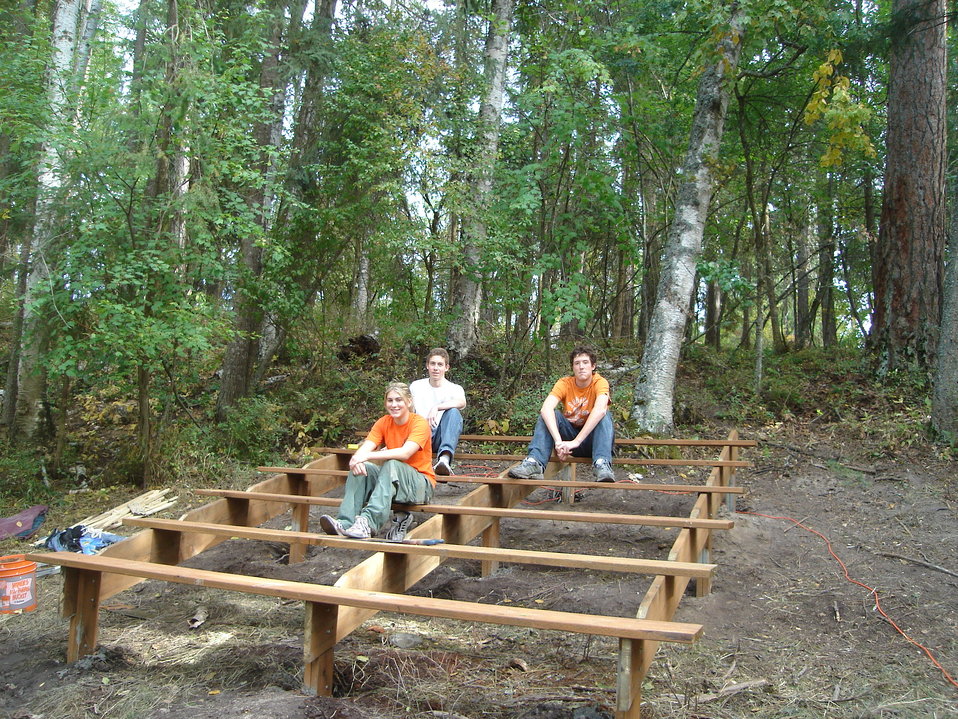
Creston National Fish Hatchery Classroom by the Creek

The nature trail was constructed in the fall of 2007 with the help of two Eagle Scout candidates. Boy Scouts from Troop 17 in Whitefish, Montana also added their support and hard work. This amphitheater is in a peaceful spot next to Mill Creek. Local schools and other groups use this outdoor classroom to learn more about the natural world around them.